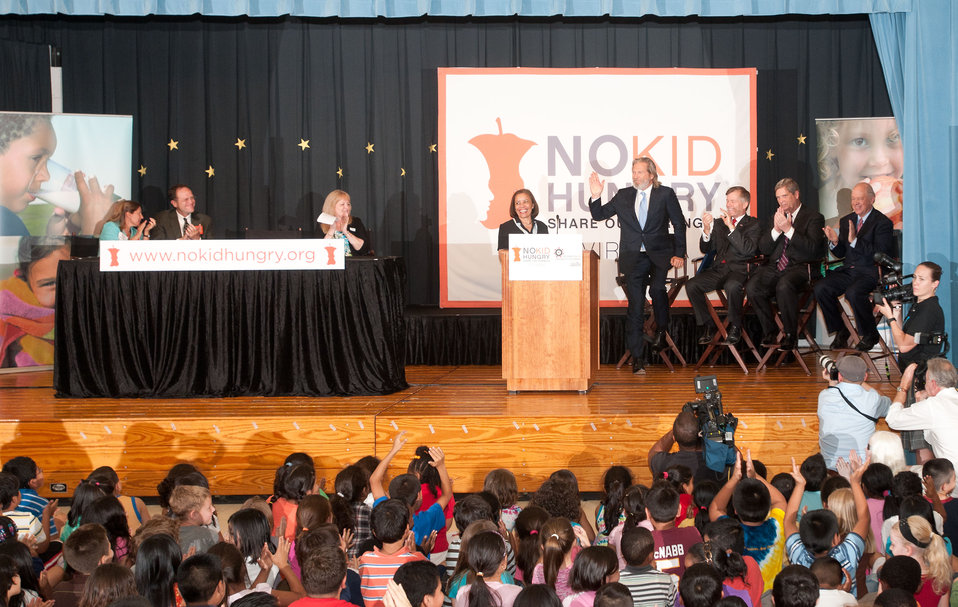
Barcroft Elementary School Principal Miriam Hughey-Guy (center), introduces Academy Award Winner and No Kid Hungry National Campaign Spokesperson Jeff Bridges and the room erupts in applause during the launch of the Virginia No Kid Hungry Campaign at the Arlington, VA, school on Tuesday, June 7, 2011.